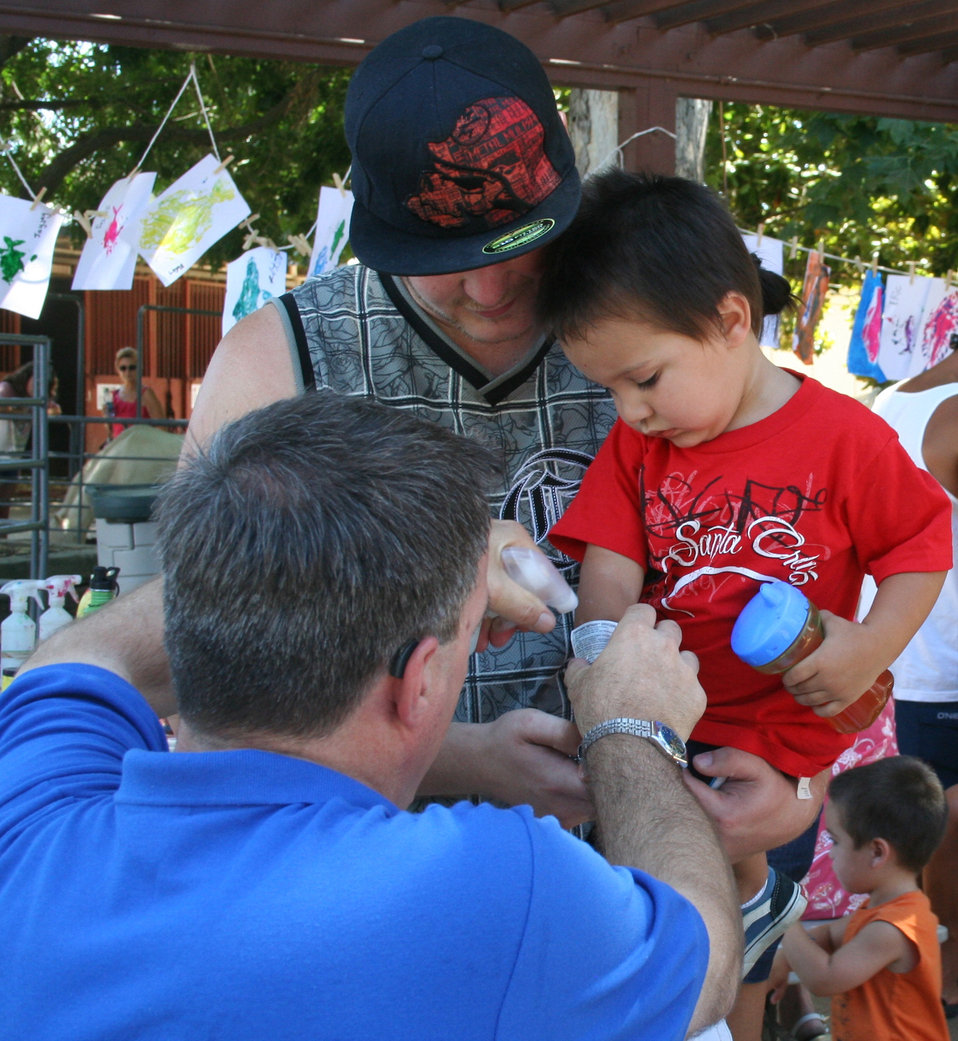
California State Fair Tattoo Area at DOI Booth

For the first time DOI agencies [US Fish and Wildlife Service, Bureau of Reclamation and Bureau of Land Management] joined together to host an America's Great Outdoors Booth at the California State Fair in Sacramento, Calif., July 14 - 31.

The booth included informational panels and displays as well as a children's activity area. Activities: wildlife masks, temporary tattoos, water-cycle bracelets, fish prints, touch boxes, scat bingo, a green-screen, coloring and bird bingo. Five days a week live raptors, snakes and bats were brought in. About 50,000 children visitied the booth during the 18-day fair.